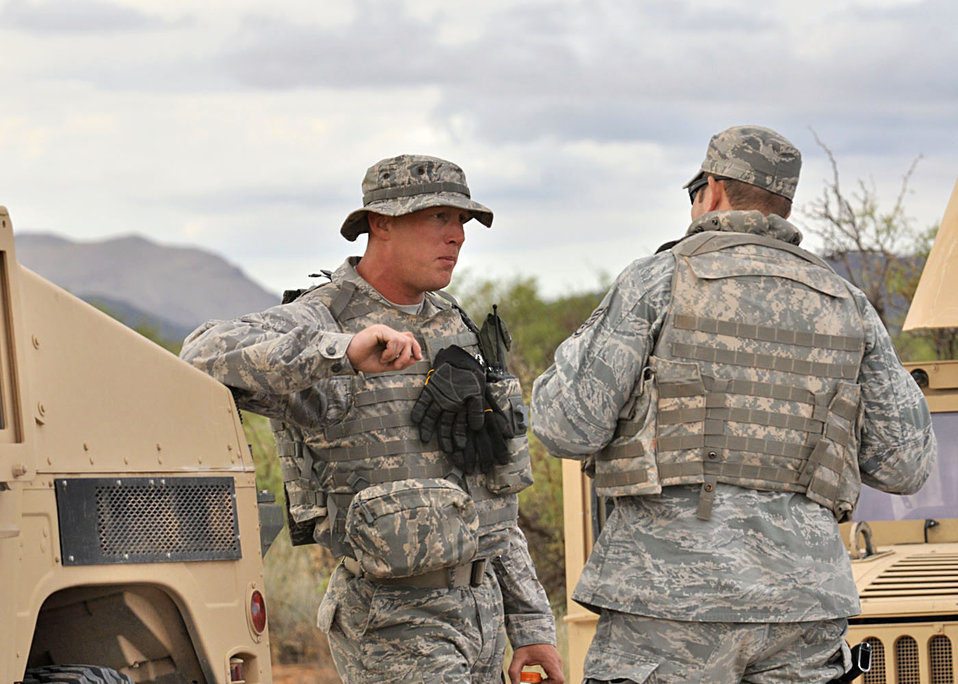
Tech. Sgt. David Butler served 12 years in the Marine Corps before becoming an instructor for the Texas Air National Guard's Desert Defender Air Force Regional Training Center in El Paso, Texas.